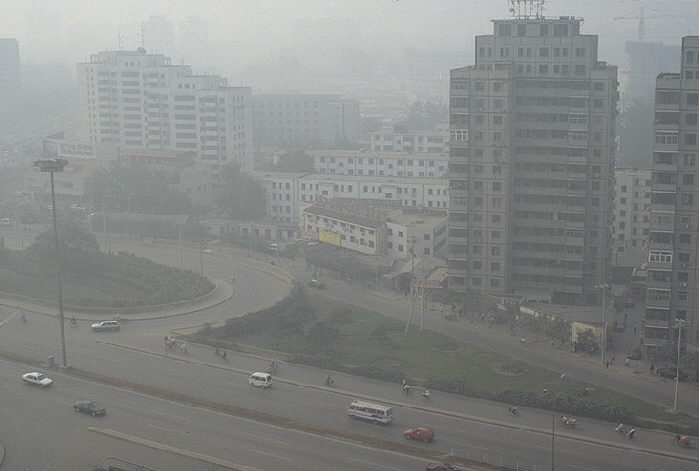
Smog in Beijing.